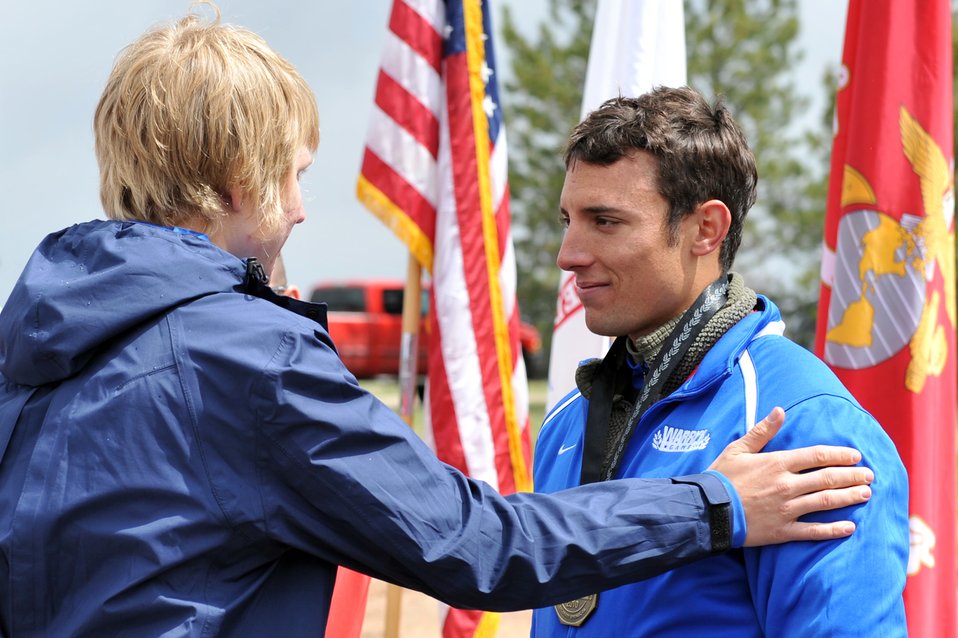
Warrior Games AF Cycling

Staff Sgt. Marc Esposito receives a bronze medal in the 20-kilometer upright bike race for the inaugural Warrior Games May 13, 2010, at the U.S. Academy in Colorado Springs, Colo. Sergeant Esposito is one of some 200 disabled veterans participating in the Paralympic-style competition May 10 through 14.